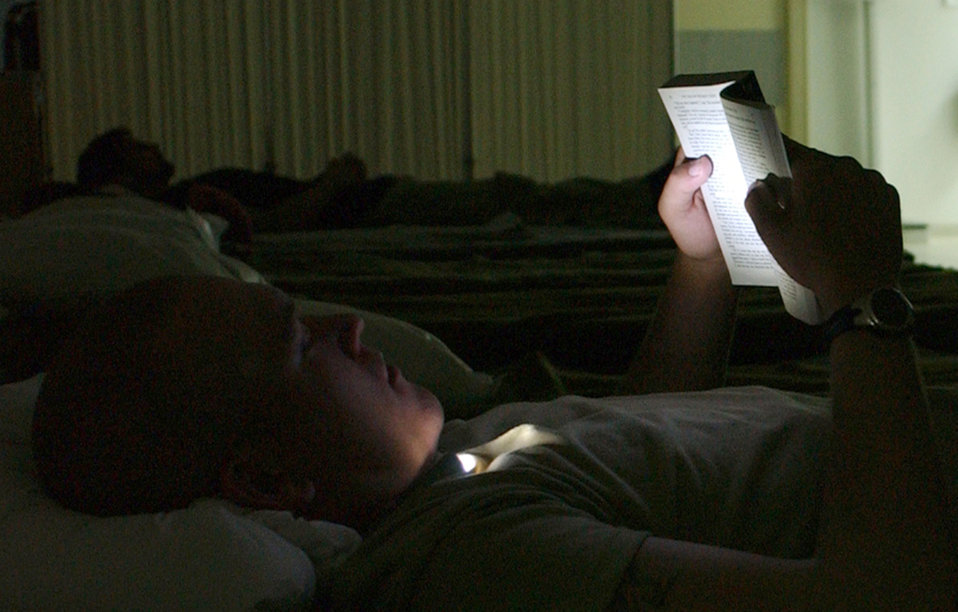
Staging facility puts wounded warriors on ?road to recovery?

Army Spc. Andrew Elsnel reads by flashlight Monday, April 3, 2006, at the Contingency Aeromedical Staging Facility at Balad Air Base while he waits for his flight out of Iraq.